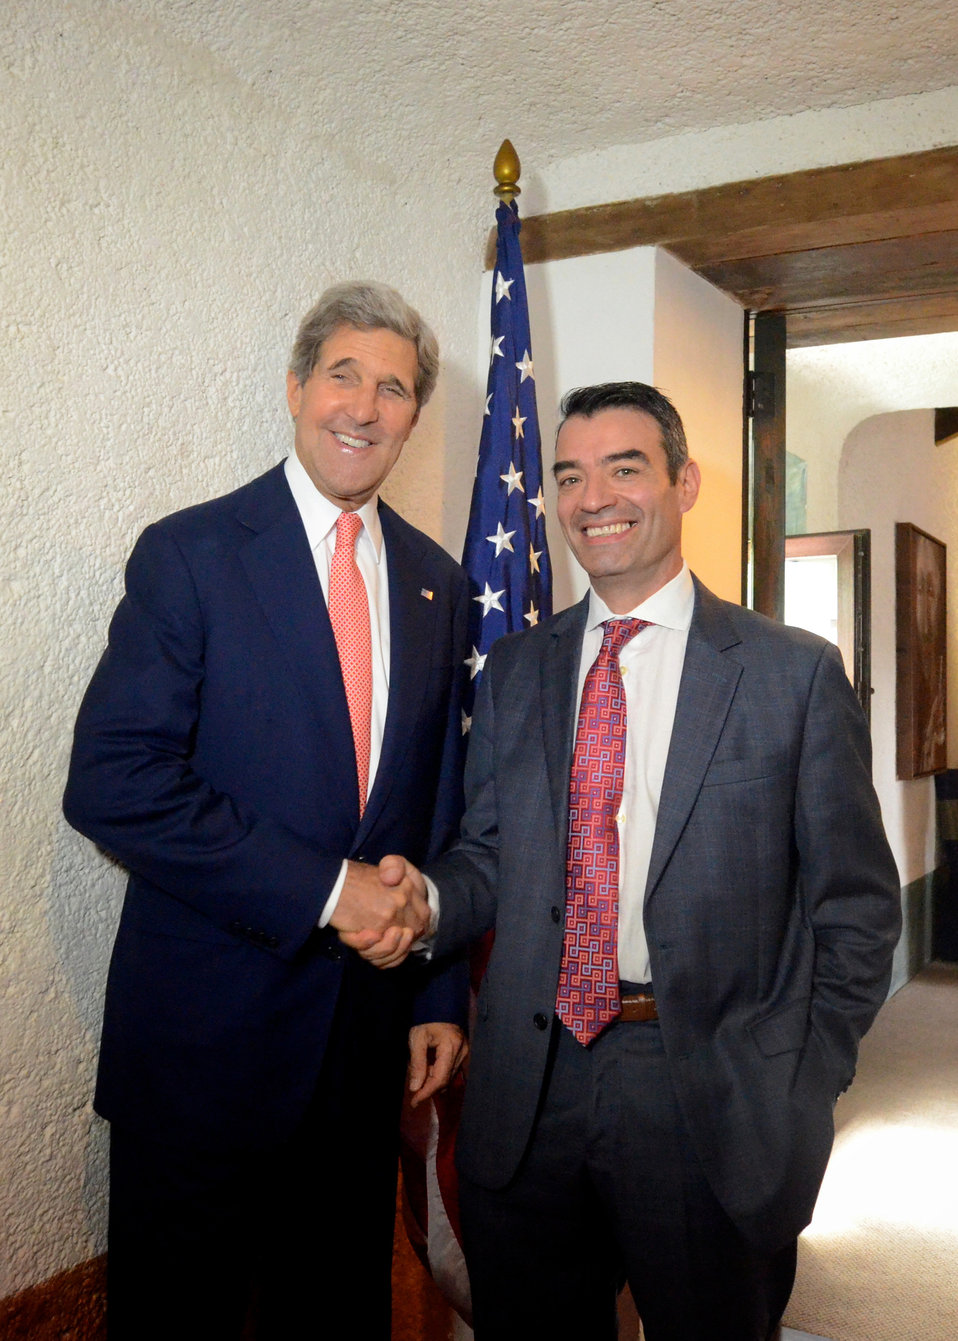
Secretary Kerry Shakes Hands With Professor Cavallaro

U.S. Secretary of State John Kerry shakes hands with James Cavallaro, the U.S. candidate to the Inter-American Commission on Human Rights, before a session of the General Assembly of the Organization of American States in Antigua, Guatemala, on June 5, 2013.